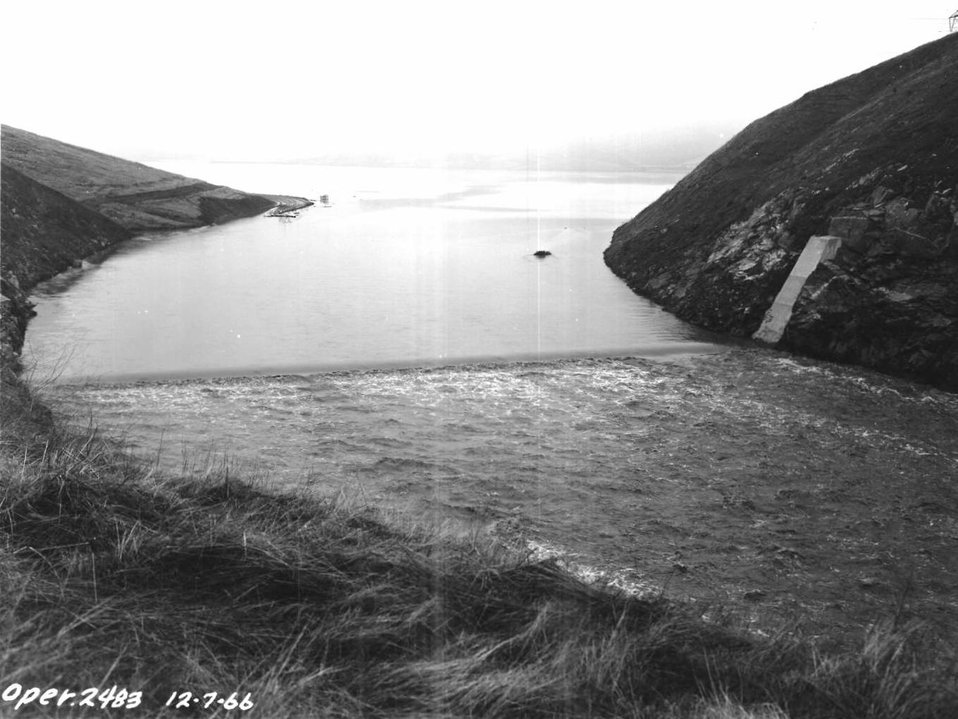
Success Dam

A historical view of the spillway at Success Dam, located near Porterville, Calif., Dec. 7, 1966. The U.S. Army Corps of Engineers Sacramento District completed construction of Success Dam in 1961 and the reservoir provides flood risk management, water storage and recreational benefits to the local area.